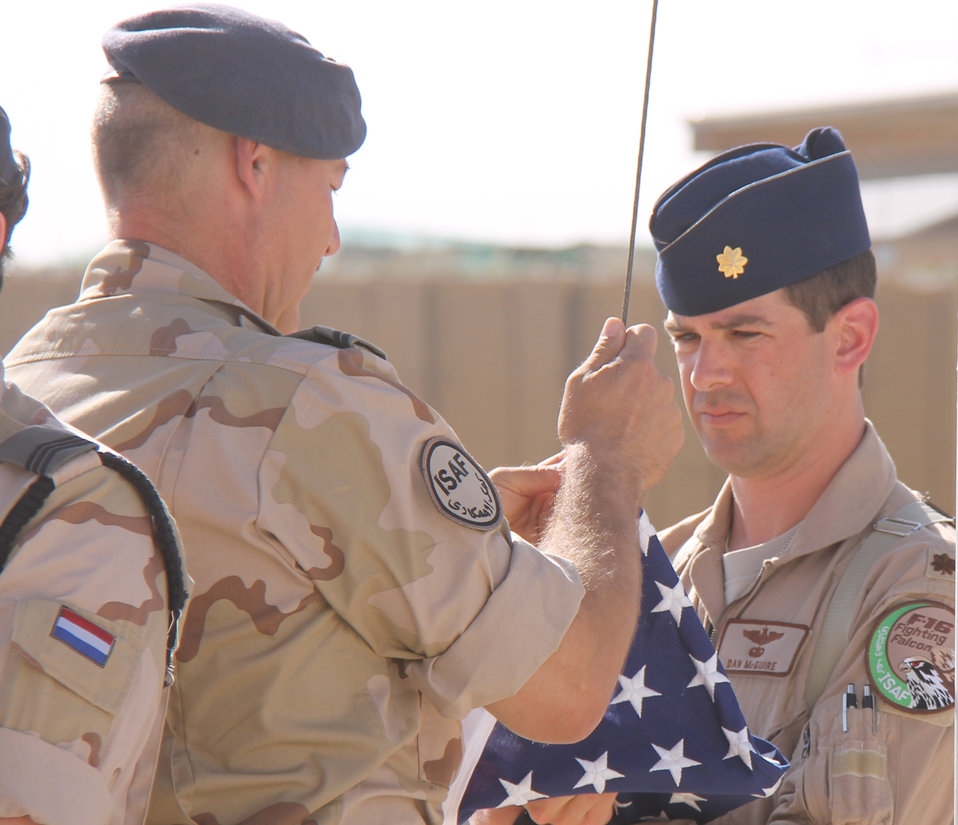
Pilot Exchange Program

Maj. Dan McGuire, an F-16 exchange pilot who was assigned to the 312th
Tactical Fighter Squadron at Volkel Air Base in the Netherlands, prepares to
fly a U.S. flag in May 2012 at his base in Mazar-e-Sharif, Afghanistan.
McGuire, who participated in the Air Force Personnel Exchange Program,
deployed for four months with the Dutch Air Task Force, a detachment of the
Royal Netherlands Defense. He flew missions throughout most of Afghanistan
supporting the International Security Assistance Force (ISAF) and Operation
Enduring Freedom.